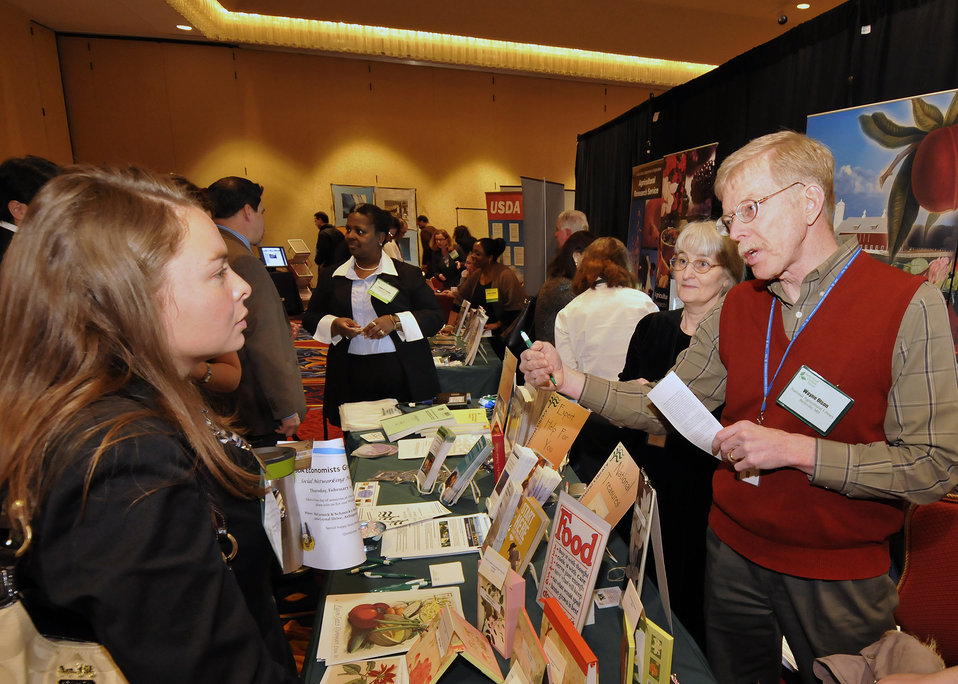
Wayne Olson (r) of the National Agricultural Library (NAL), in Beltsville, MD, a USDA exhibitor at the World Agricultural Outlook Board (WAOB) Forum at the Crystal City Marriott in Arlington, VA, on Thursday, February 24, 2011. Explains what the NAL does to an attendee at the Forum.